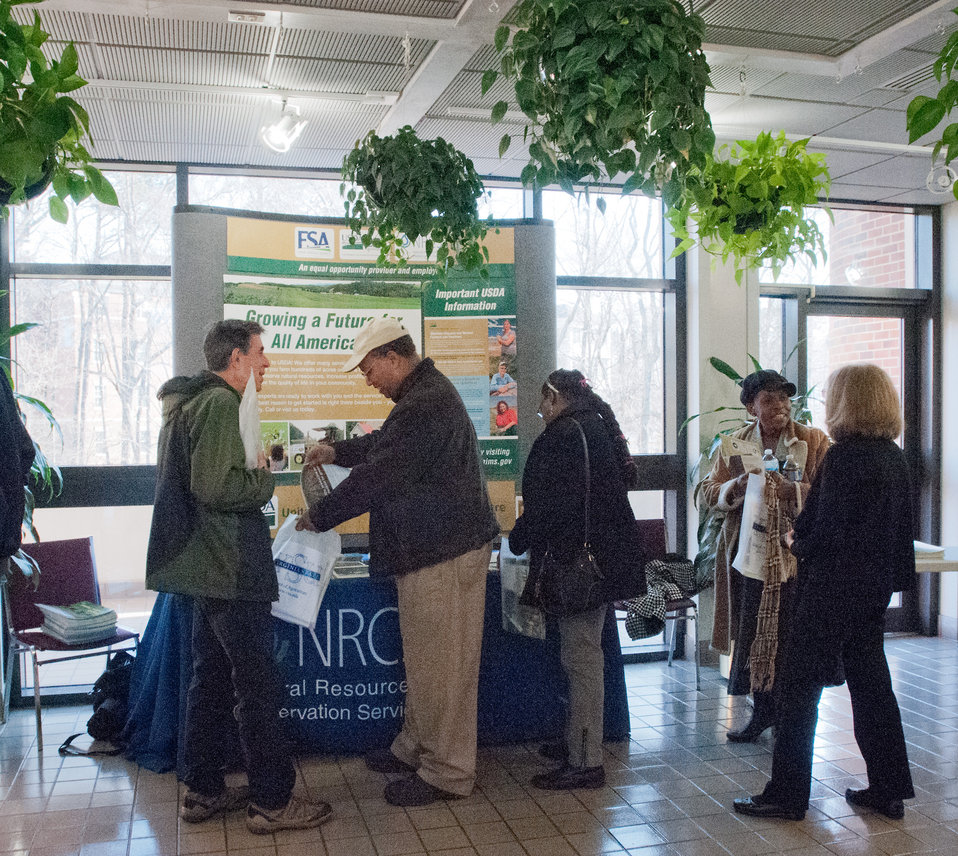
Staffers and farmers came together for the “Virginia State University (VSU), U.S. Department of Agriculture (USDA) and Virginia Farmers Working Together” outreach workshop in the VSU, L. Douglas Wilder building on Thursday, March 7, 2013, in Petersburg, VA. Farmers shared and learned new ways to do more with USDA services, and how to apply for programs that will help grow their business.